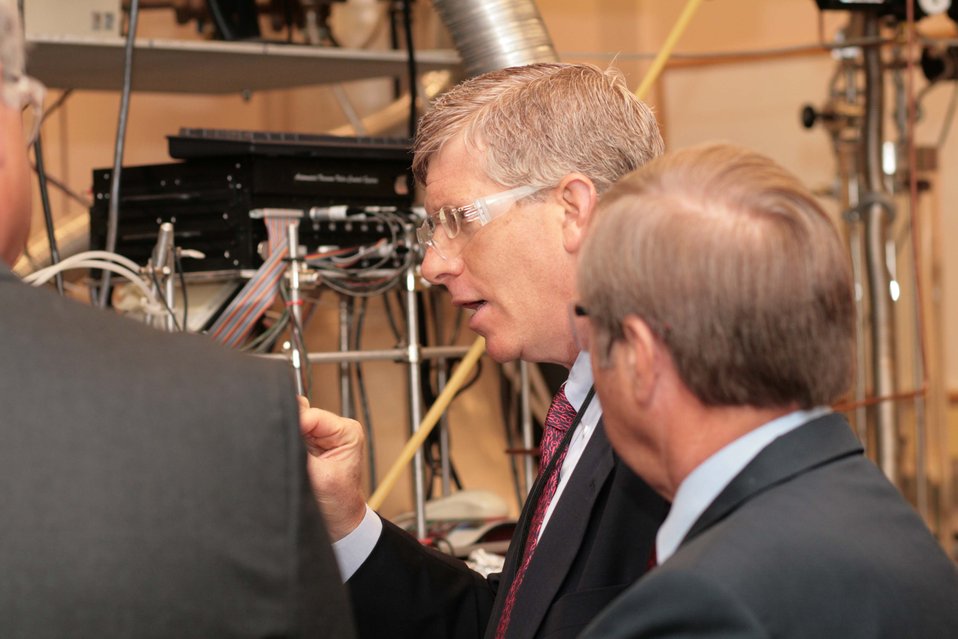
P-8